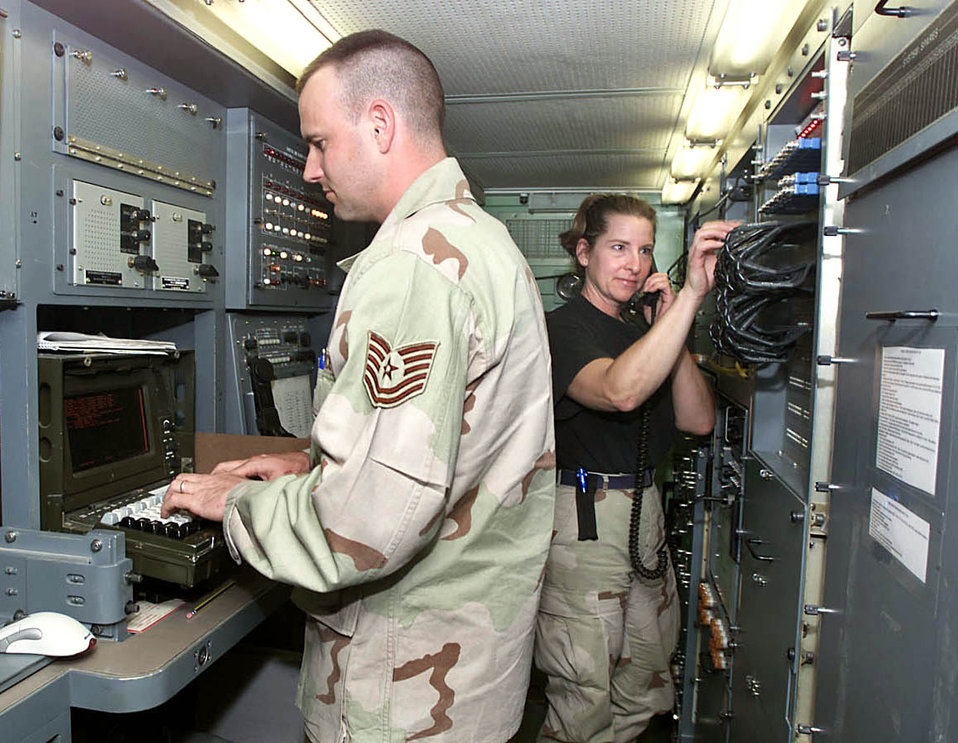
Van guards

OPERATION SOUTHERN WATCH -- Tech. Sgt. Brian Smith works with Master Sgt. Valeria Goehring inside a communications van at a forward-deployed location. Smith, from Robins Air Force Base, Ga., is the lone active-duty airman working with nine members of the California Air National Guard's 234th Combat Communications Squadron from Hayward Air National Guard Station.